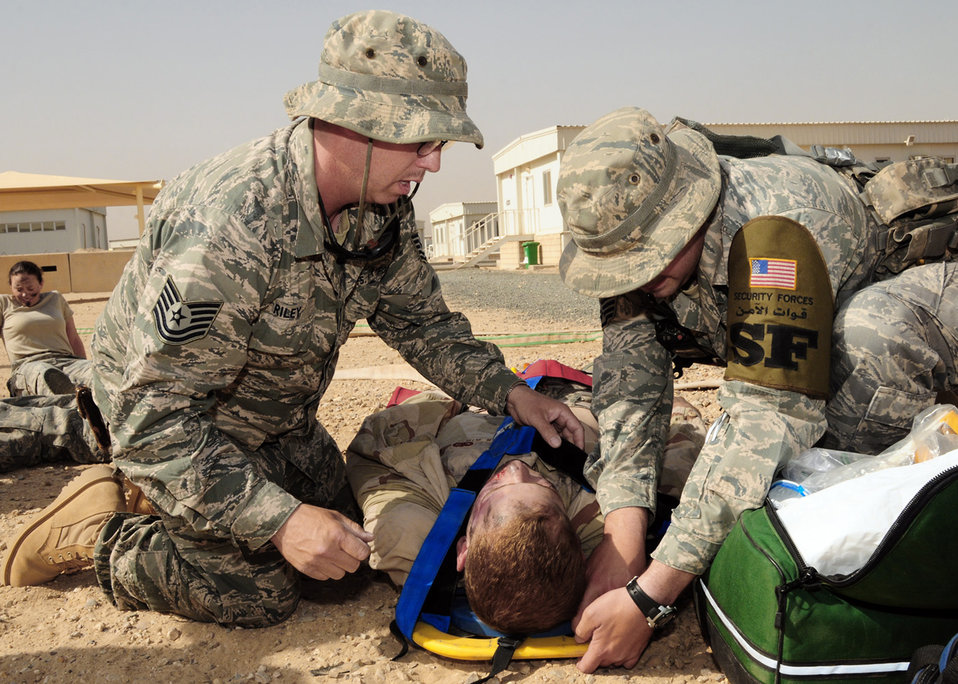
386th AEW conducts dorm fire exercise

Emergency personnel strap down a simulated patient to a back board after recovering him from a simulated dorm fire during a June 22 exercise at an air base in Southwest Asia. The exercise was performed to evaluate the first responders as well as the command and control notification process.